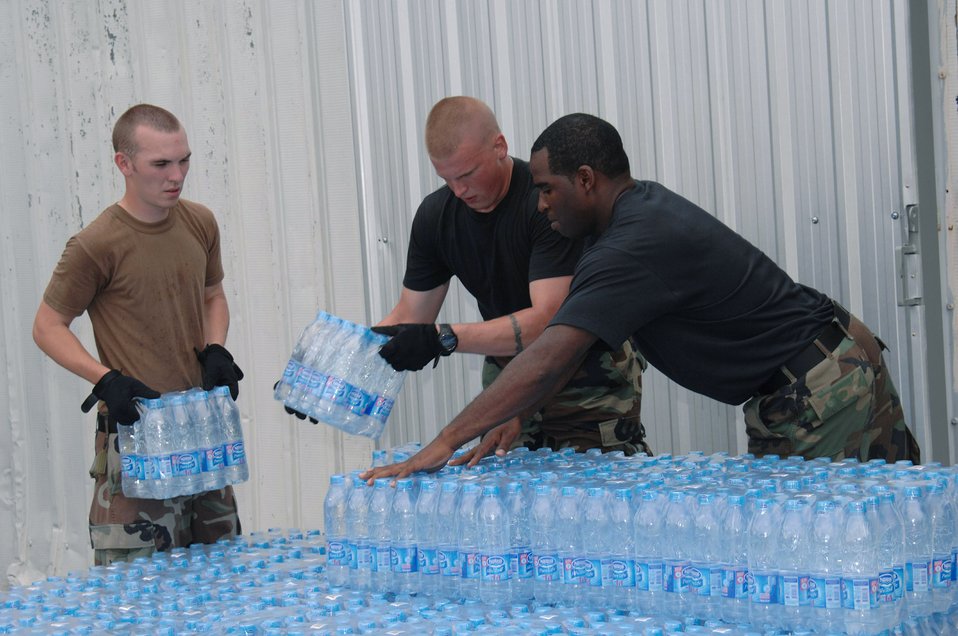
Airmen support Burma relief effort

Senior Airman Shaun Rhine, Staff Sgt. Shaun Kegin and Tech. Sgt. Andree Curlee package bottled water in support of humanitarian relief efforts for the victims of Cyclone Nargis in Burma May 11 at Utapao Air Base, Thailand. Approximately 45 servicemembers from Andersen Air Force Base, Guam, arrived in Thailand May 8 to offer their assistance with a water purification unit and two airfield opening/operating teams. Airman Rhine and Sergeant Kegin and Curlee are assigned to the 36th Contingency Response Group from Andersen AFB.